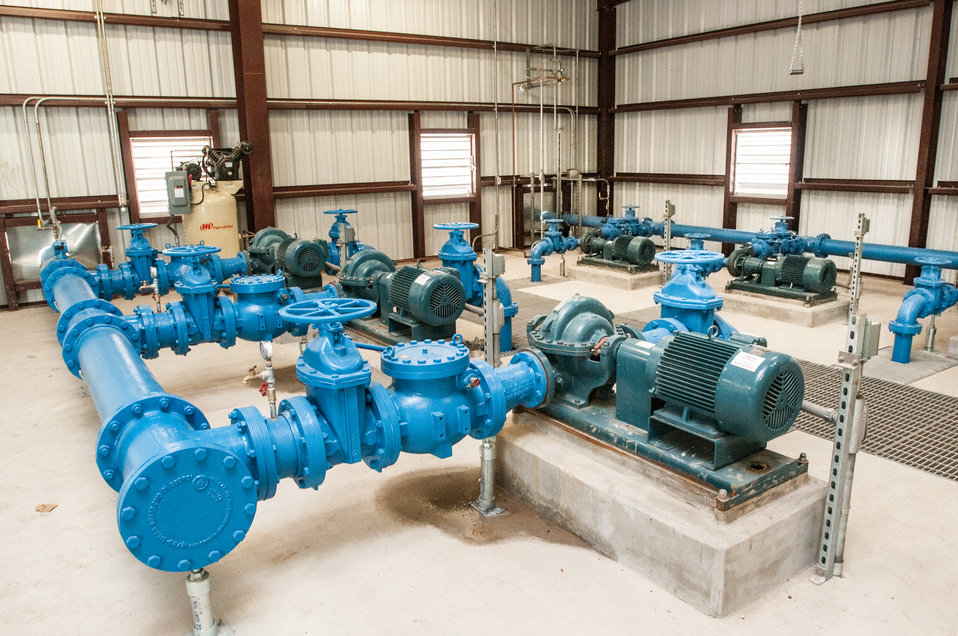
Pump systems of the Freer Water Control and Improvement District (FWCID) Arsenic Removal System facility, in Freer, TX, on Tuesday, June 18, 2013. Freer Water Control and Improvement District (FWCID) benefits from the financial assistance of the U.S. Department of Agriculture (USDA) Rural Development (RD) to complete a two-phase approach to meeting the city’s water supply and safety needs, on Tuesday, June 18, 2013. Although, the naturally occurring arsenic levels have remained constant for more than a century, the Environmental Protection Agency (EPA) safe level standards have established lower levels of arsenic to be safe for human consumption. To meet those levels FWCID approached USDA and was awarded a $986,000 loan for Phase I, to install two new water wells, each rated at 167 gallons per minute (creating a total of eight wells); 13,600 feet of well collection lines; and 15,000 linear feet of well control line to remotely control the well pumps and the 1,000,000 gallon holding tank at the well facility, which supplies water to the new Arsenic Removal System (Phase II). Previously, water was manually controlled by personnel who knew when and how long to manually opened and closed water valves or started well pumps to ensure holding tank levels were within operating levels during peek and slack times of the day. Phase II was a combination of a $1,832,000 loan and a $1,258,750 grant, which provided for the customized arsenic removal system, seen in these photos. The system includes a new 3,530 sp. ft. facility, on a .76-acre site, and houses the operations room, computer and power system, laboratory room, and pump systems. The entire operation can be monitored through a desktop computer interface system. The computer-controlled system ensures raw water is fed to the arsenic removal pump system, which works in sequence to maintain a constant pressure, when needed, to pump water through (blue) arsenic removal absorber vessels, and into ground storage tanks that feeds the residential and commercial needs of the city. Samples of water are periodically tested; and so far the arsenic levels have been below 1 part per billion (PPB), well under the 10 PPB limit.